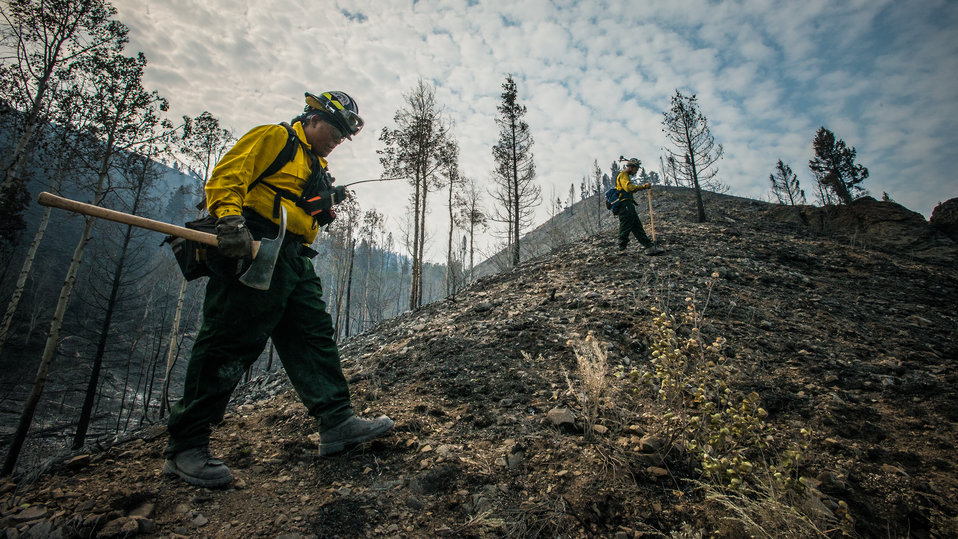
Department of the Interior, Indian Affairs (BIA) Southern Plains Initial Attack Type 2 Crew Ryan Blackstar, is a Sawyer B Faller, looking for hotspots of hot embers above or below the ground that may threaten homes at the bottom of this hill, during the Beaver Creek Fire, west of Hailey, ID, in the U.S. Department of Agriculture (USDA) Forest Service (FS) and Sawtooth National Forest and Bureau of Land Management (BLM) lands, on Wednesday, Aug 21, 2013. A sawyer is a person who runs the power saws to cut down trees. The B qualification means the person has demonstrated sufficient judgment, skill, and knowledge to be trained or certified in moderately complex chain saw operations. Certified Faller B individuals may work independently on project or fireline assignments up to their level of skill. They demonstrate the judgment to decline assignments that exceed their skill level.